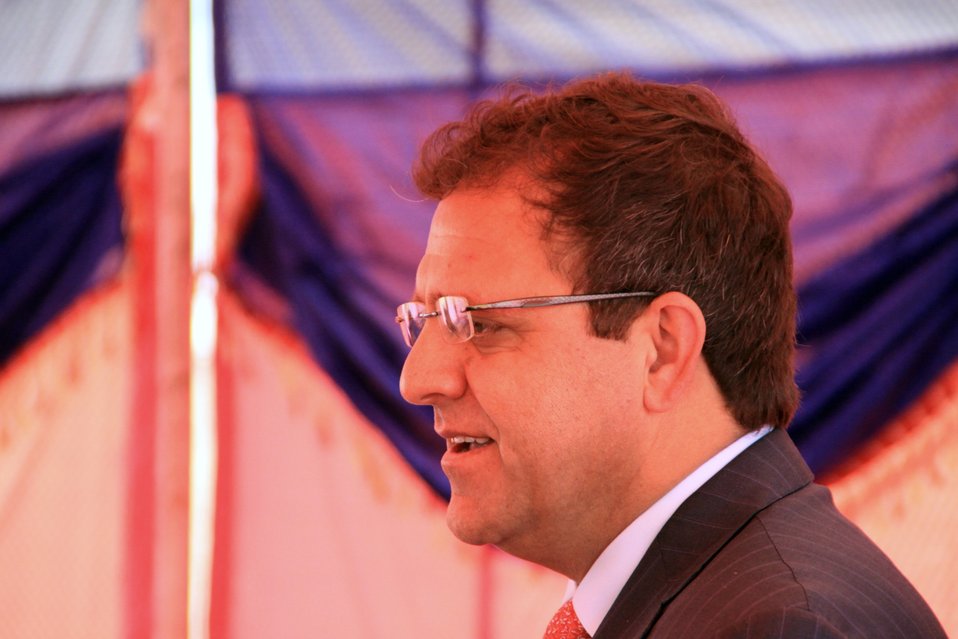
Badam Bagh Farm